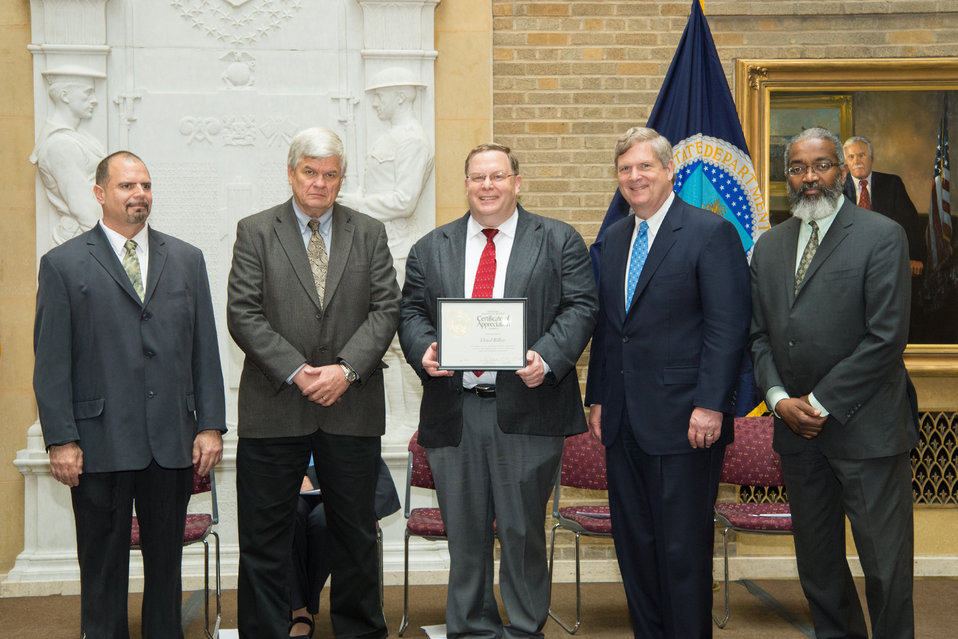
U.S. Department of Agriculture (USDA) Agricultural Research Service (ARS) North Dakota Lloyd Billey receives the Unsung Hero Award from USDA’s Organization of Professional Employees President (OPEDA) Louis Iacoletti, USDA ARS Dr. Larry Chandler, Agriculture Secretary Tom Vilsack and USDA Assistant Secretary for Administration Dr. Gregory Parham at USDA in Washington, D.C. on Wednesday, May 7, 2014.